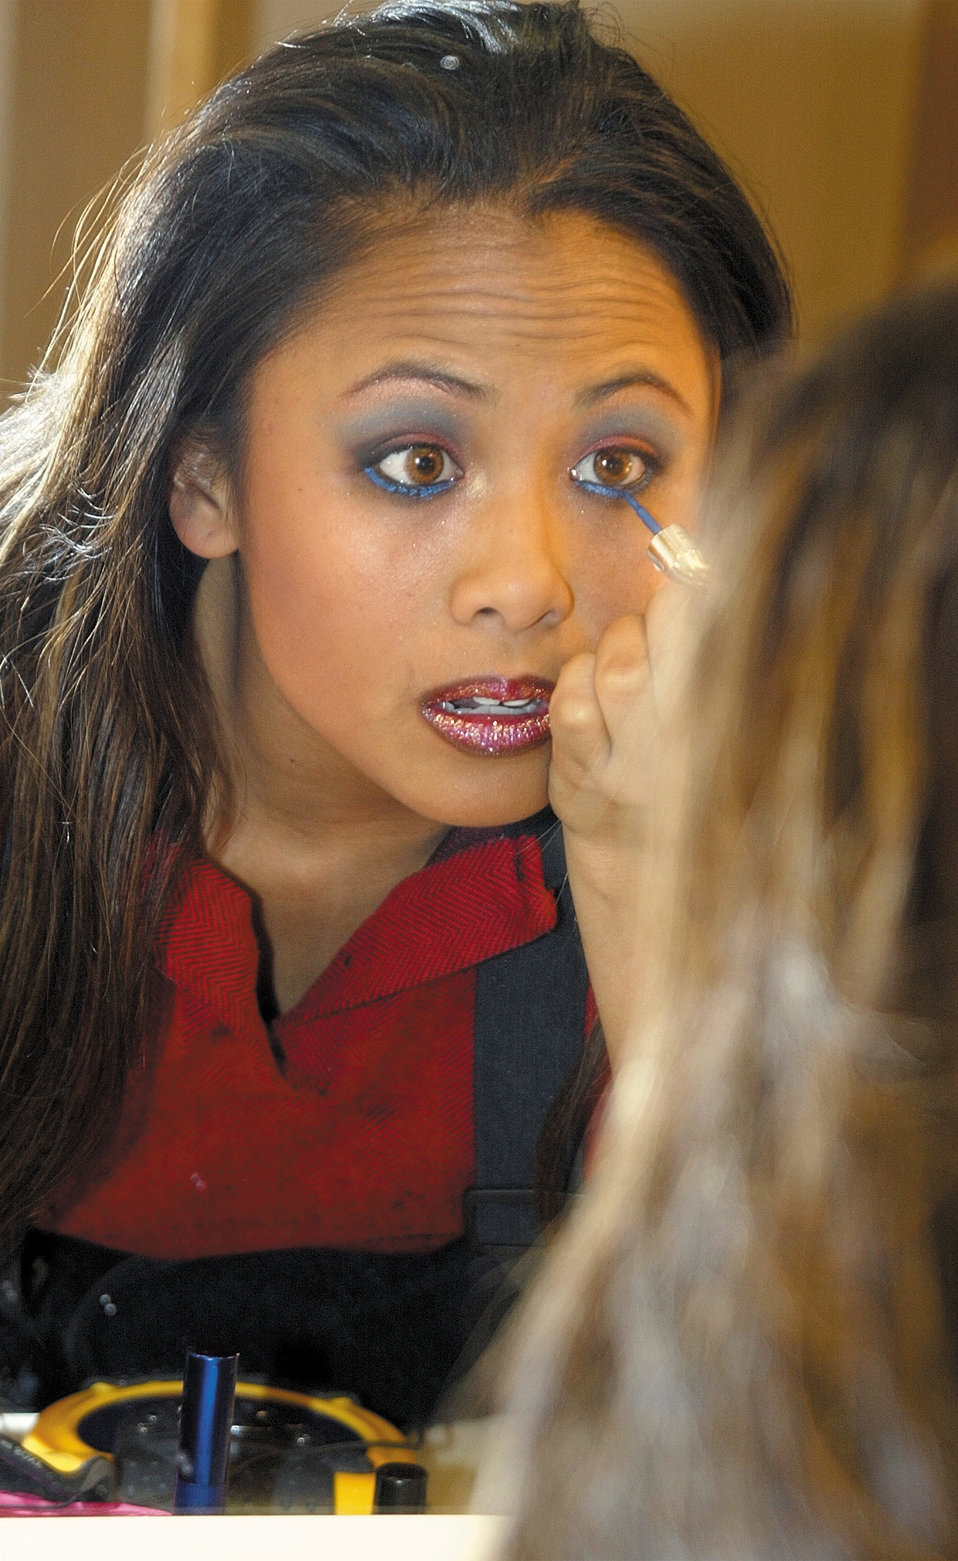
A dash of Air Force blue

FAYETVILLE, N.C. -- Capt. DeeDee Vasquez puts her makeup on before a Tops in Blue performance celebrating 50 years of entertainment at the Crown Auditorium here March 6. Tops in Blue is the premier entertainment showcase of the Air Force and comprises 35 Airmen who are vocalists, musicians and dancers. Captain Vasquez is a communications officer at Ramstein Air Base, Germany.